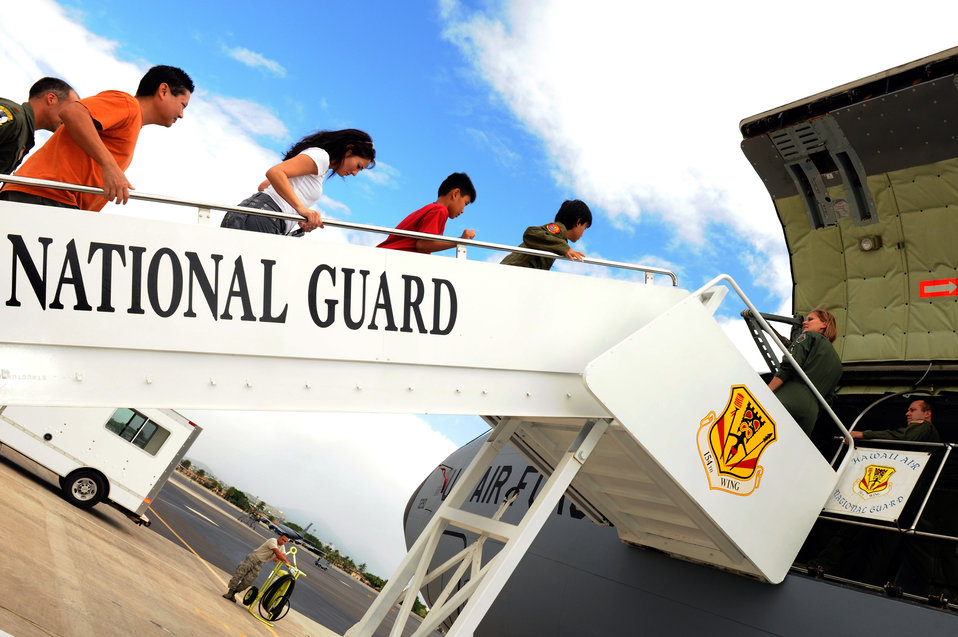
11-year old becomes a pilot

Ryder Lum, his parents Richelle and David, and his best friend Everett Fan, climb the air stairs into a KC-135 Stratotanker Oct. 29, 2010, on the flightline at Joint Base Pearl Harbor-Hickam, Hawaii. Ryder was part of the 535th Airlift Squadron's quarterly Pilot for a Day program, which allows children with catastrophic disorders or illnesses to experience a day in the life of an Air Force pilot.